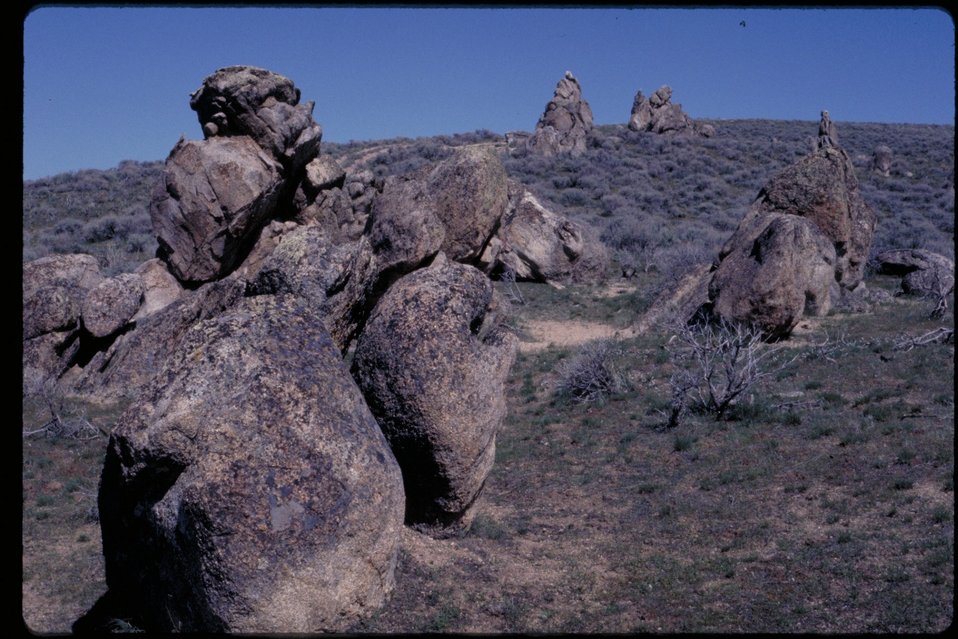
Rocks along Oregon Trail East of Ditto Creek Lower Snake River District